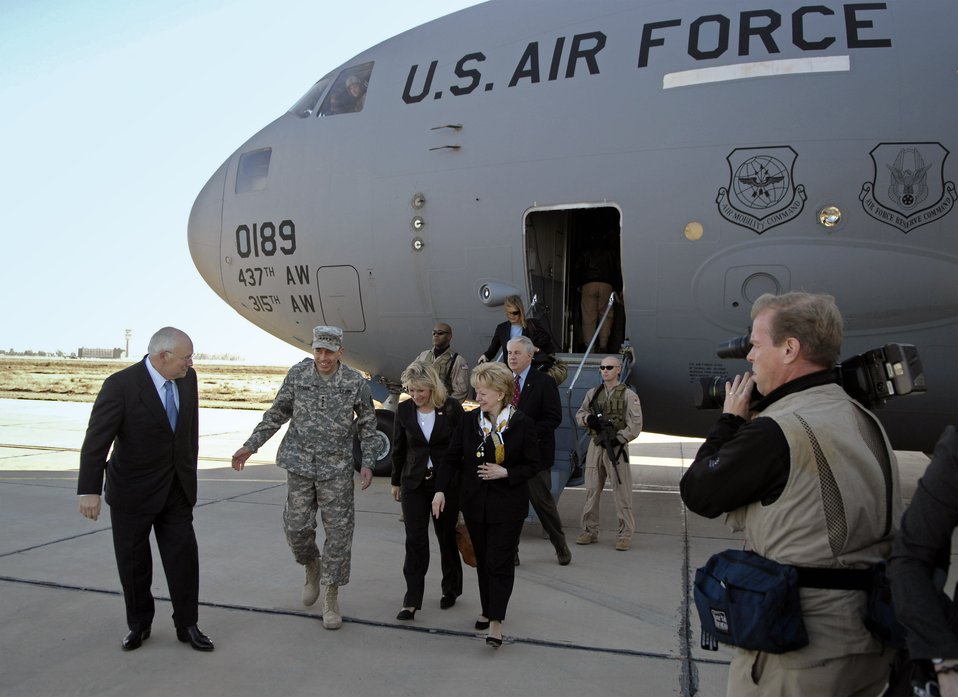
Vice president arrives in Baghdad via Sather

Vice President Dick Cheney talks with Army Gen. David Petraeus upon disembarking a C-17 Globemaster III March 17 at Sather Air Base, Iraq. The C-17 is based out of Charleston Air Force Base, S.C. General Petraeus is the commanding general of the Multi-National Force - Iraq.